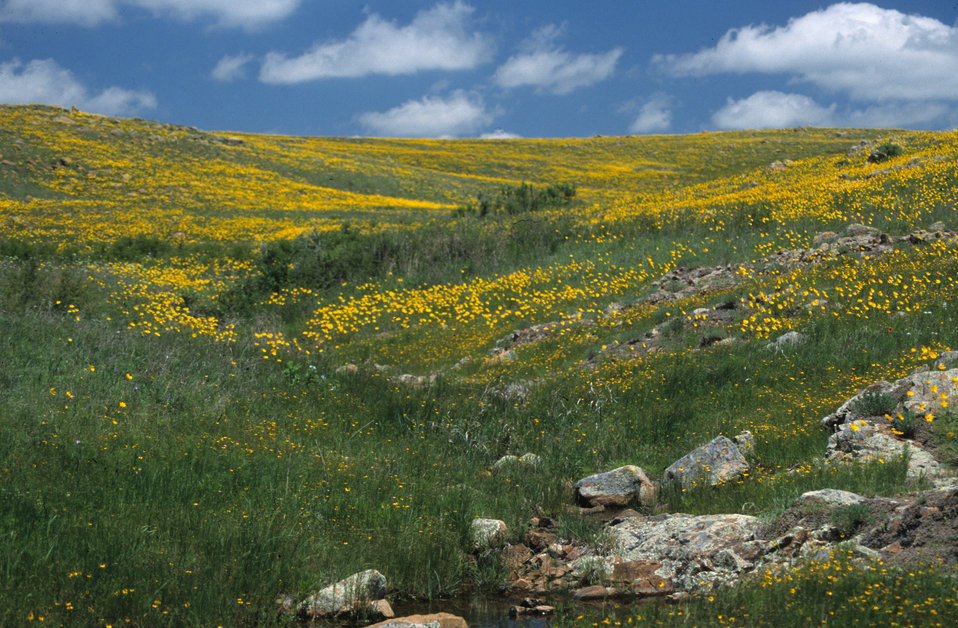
Coreopsis sp. in field

Spring wildflowers at Wichita Mountains Wildlife Refuge.